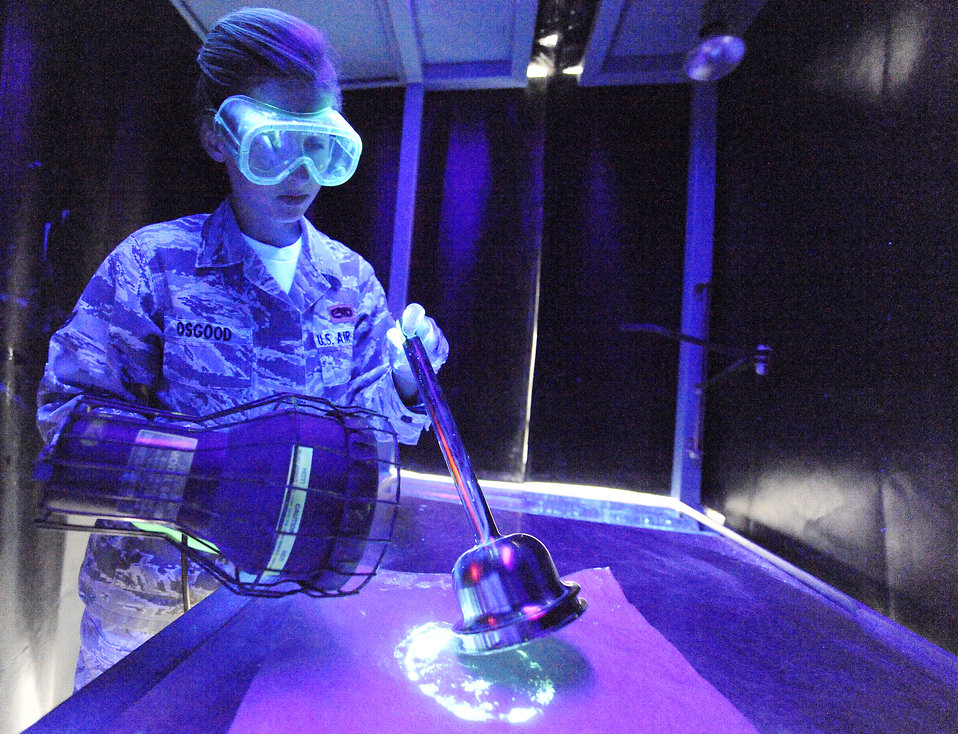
Closer inspection

Airman 1st Class Danna Osgood, with the 1st Equipment Maintenance Squadron Non-Destructive Inspection shop, checks an F-15 Eagle bell house hydraulic component March 22, 2010, at Langley Air Force Base, Va. for cracks and flaws.